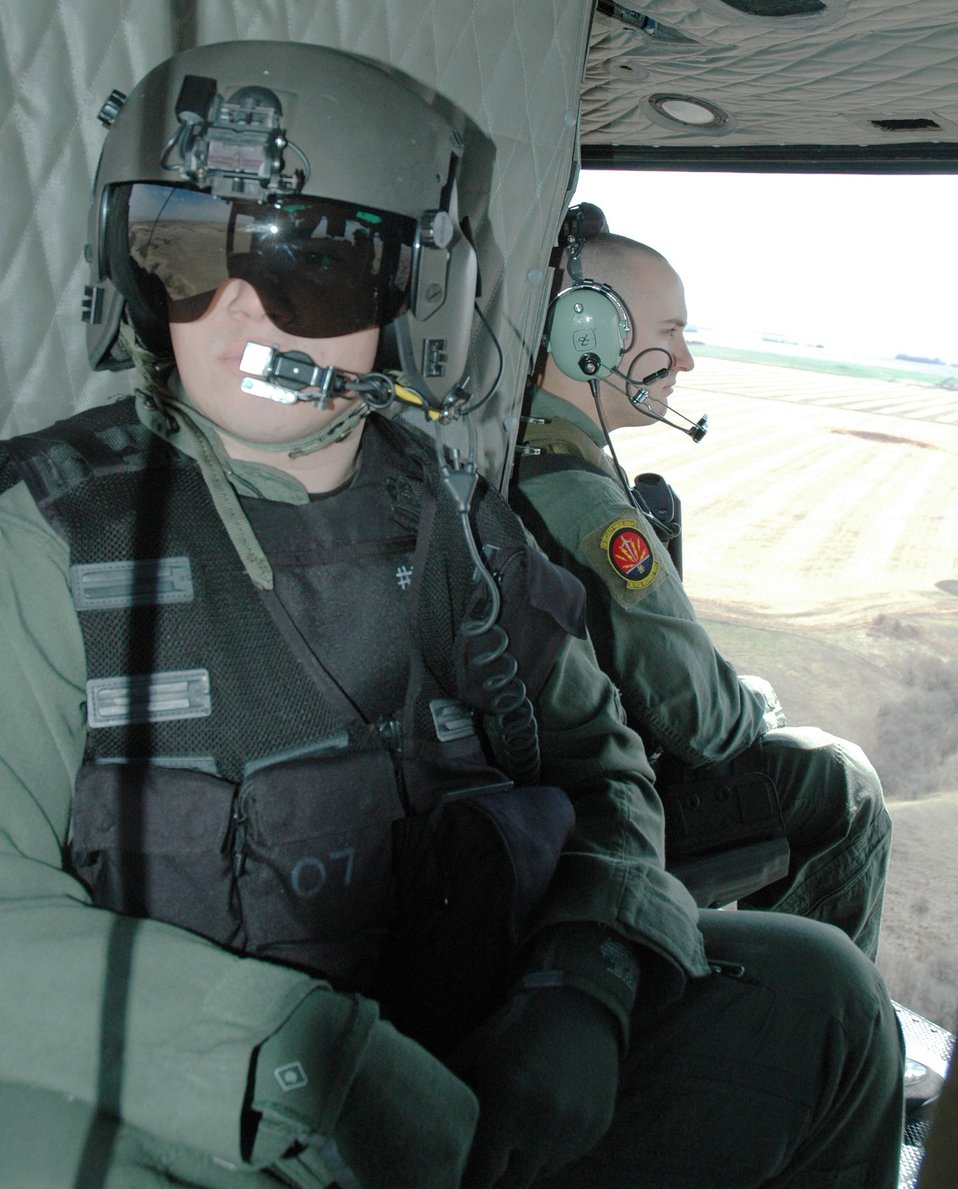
Helicopter squadron provides support, security from air

Airman Timothy Merlin scans the terrain during a security mission April 26 near Minot Air Force Base, N.D. As flight engineer with the 54th Helicopter Squadron, one piece of equipment Airman Hardin gets to use is the Forward Looking Infrared System, a high-tech camera with night vision and thermal heat-seeking capabilities. Airman Hardin uses the FLIR system to scan surrounding areas during missions.